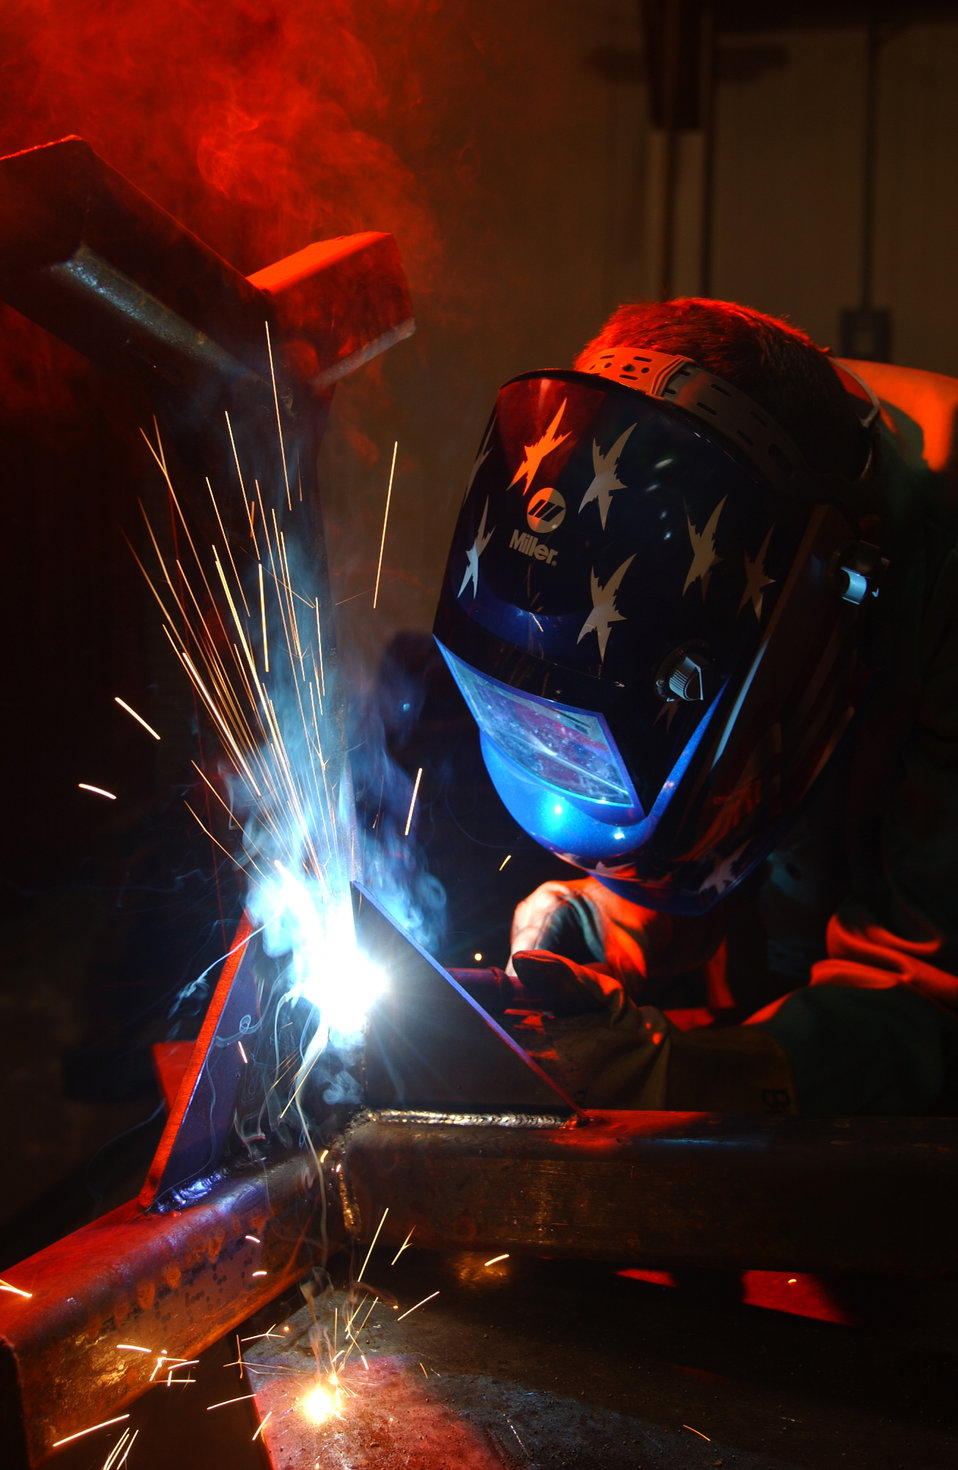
Spark and grind

KUNSAN AIR BASE, South Korea -- Senior Airman Brad Duncan uses a welder to repair a munitions stand here Nov. 30. He is assigned to the 8th Maintenance Squadron's fabrication shop.